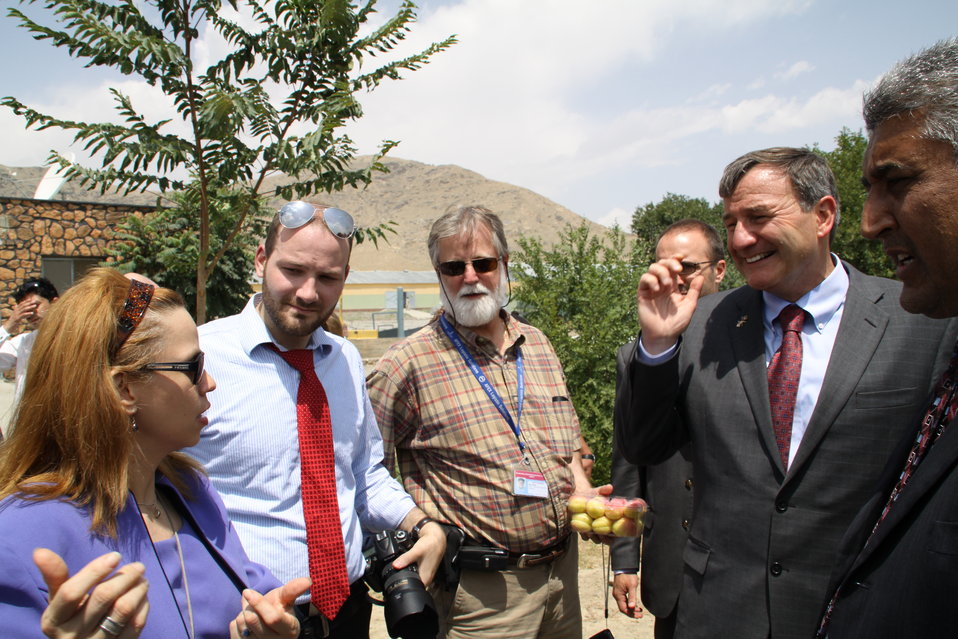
Badam Bagh Farm